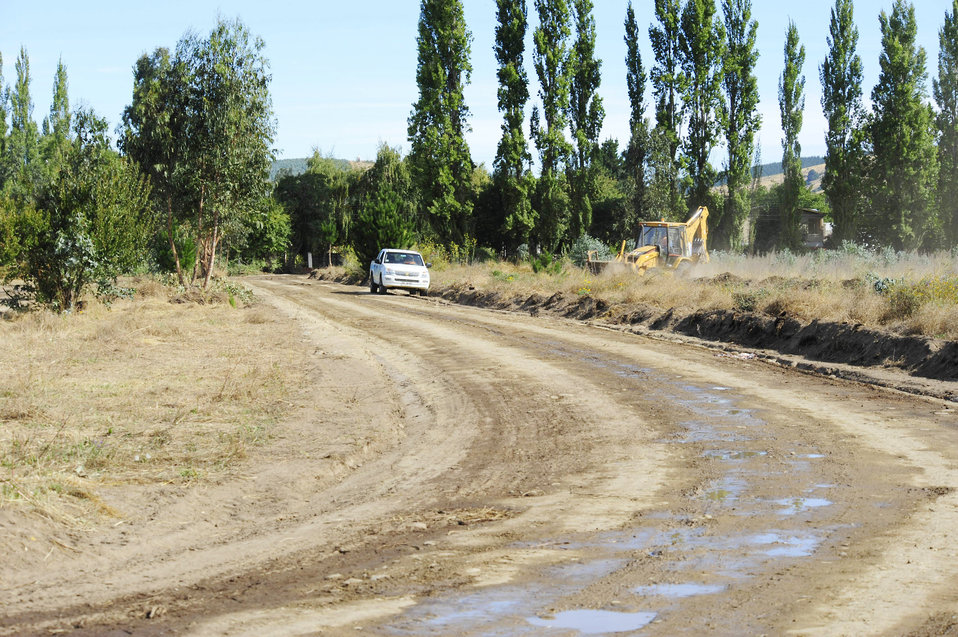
Airmen build hospital in Chile

A road leads the way from the community of Angol, Chile, to the newly constructed Air Force Expeditionary Medical Support mobile hospital March 10, 2010. The local hospital in Angol, a city southeast of Conception, Chile, was destroyed as a result of an 8.8-magnitude earthquake Feb. 27. With the nearest operation ward 40 miles away, and many other local hospitals overwhelmed with casualties following the earthquake, local Chilean officials requested assistance from U.S. forces to help with primary care capabilities.